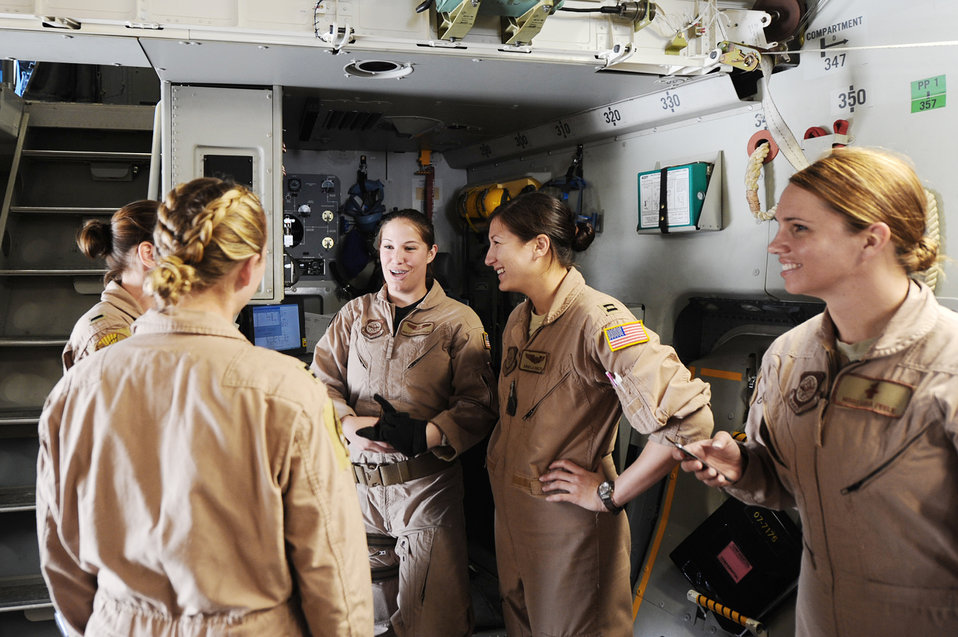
C-17 flight commemorates Women's History Month

Members of an all-female aircrew discuss the mission before flight at an air base in Southwest Asia March 10, 2010. Honoring Women's History Month were crew members: (left to right) Capt. Alicia Dittus, pilot; 1st Lt. Erica McCaslin, pilot; Master Sgt. Lisa Peele, first sergeant; Capt. Angela Kimler, pilot and Senior Airman Christine Collier, loadmaster. All are assigned to 816th Expeditionary Airlift Squadron.